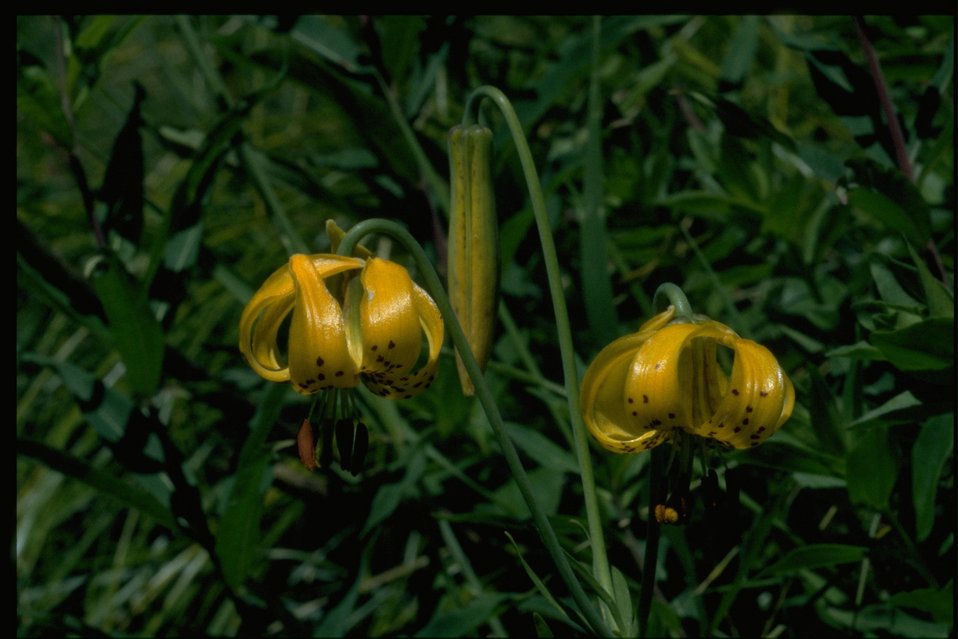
Medium shot of Lilium columbianum.